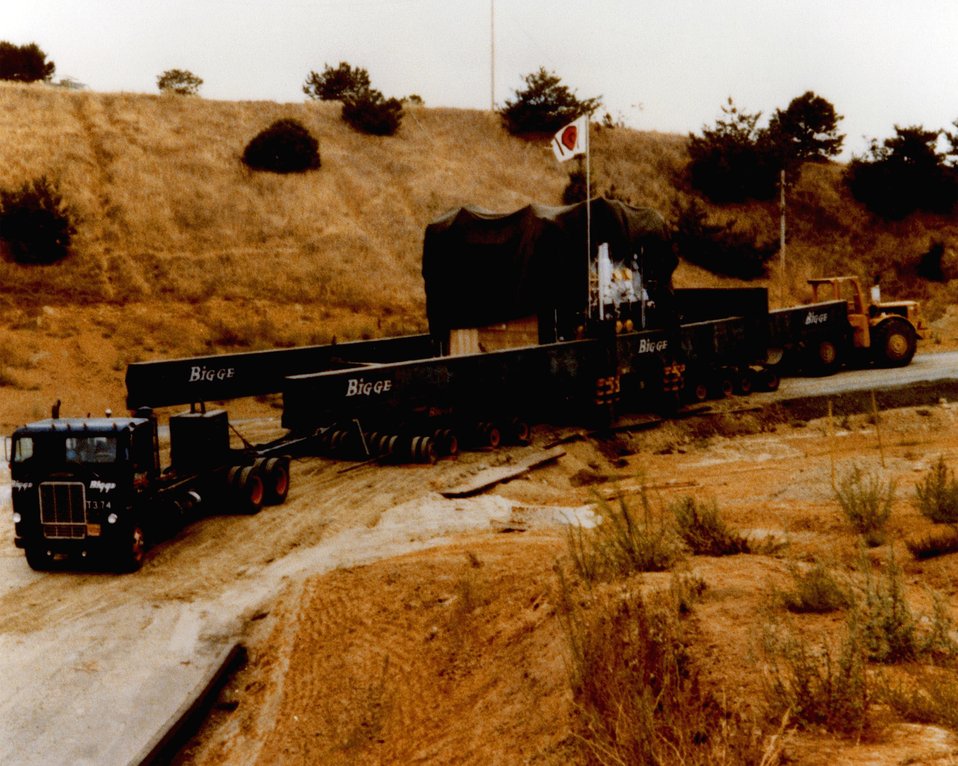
THE MARK II DETECTOR EN-ROUTE FROM SPEAR TO THE POSITRON-ELECTRON PROJECT.

THE POSITRON-ELECTRON PROJECT (PEP) IS A JOINT UNDERTAKING OF STANFORD LINEAR ACCELERATOR CENTER (SLAC) AND THE LAWRENCE BERKELEY LABORATORY (LBL). THE PEP MACHINE IS DESIGNED TO STORE BEAMS OF ELECTRONS AND POSITRONS CIRCULATING IN OPPOSITE DIRECTIONS AT SINGLE-BEAM ENERGIES BETWEEN 4 GEV AND 18 GEV. THE SOURCE OF THE BEAMS WILL BE THE PRESENT SLAC ACCELERATOR. THE COUNTER-ROTATING BEAMS OF ELECTRONS AND POSITRONS WILL COLLIDE WITH EACH OTHER AT SIX POINTS IN THE MACHINE. THESE COLLISION OR BEAM-INTERACTION POINTS WILL BE USED FOR HIGH-ENERGY PHYSICS EXPERIMENTS.